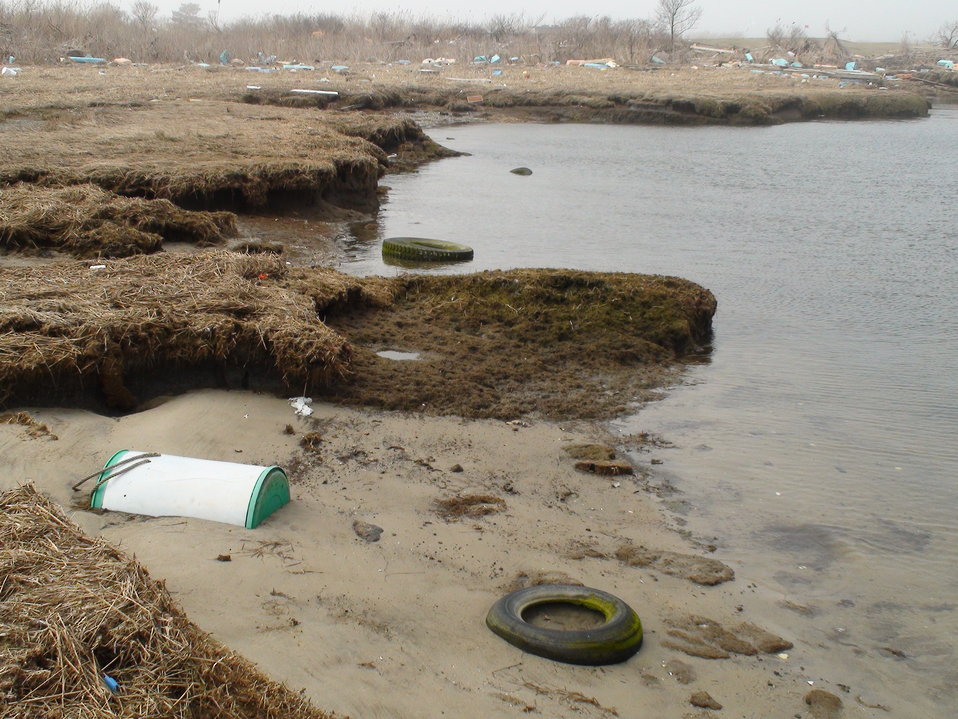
Debris at Lido Beach Wildlife Management Area

These damages were caused by Hurricane Sandy.